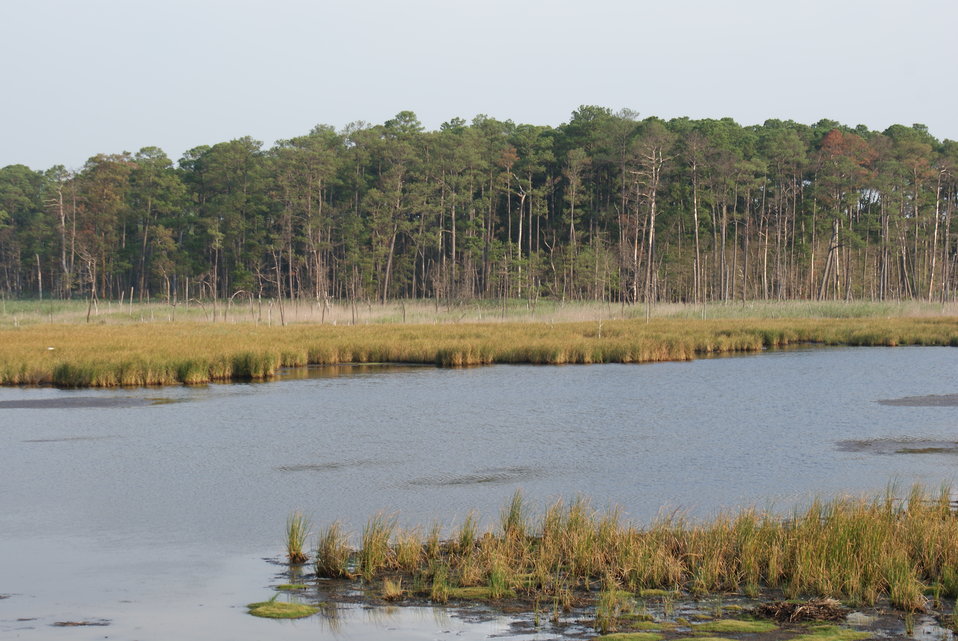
Blackwater National Wildlife Refuge

Three Square in the foreground with predominately Loblolly pine forest in the background. Photographed from the observation platform along the wildlife drive.